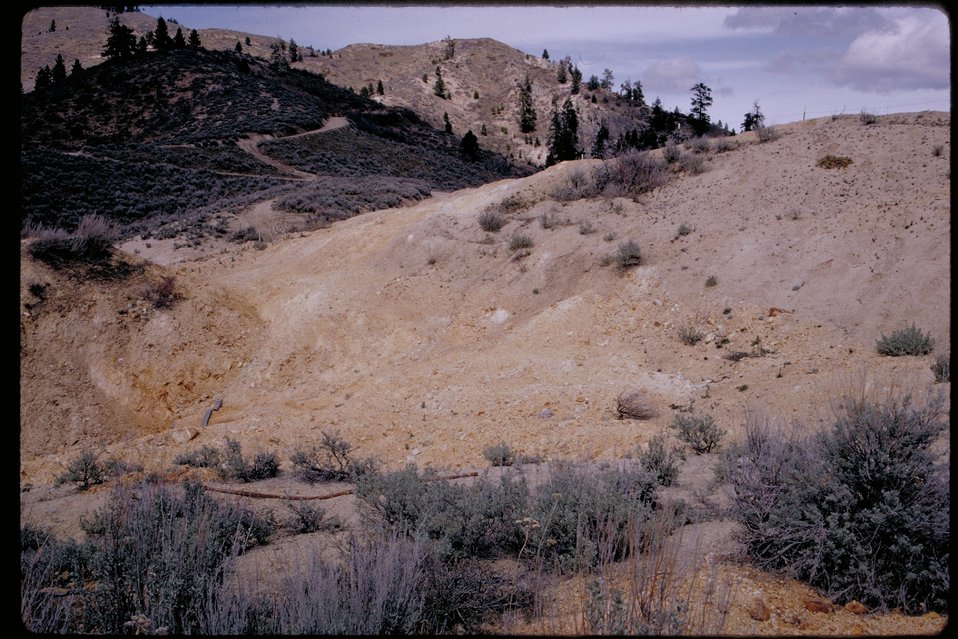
Recent Mining Boise Front AML Abandoned Mine Lands Four Rivers Field Office LSRD Lower Snake River District